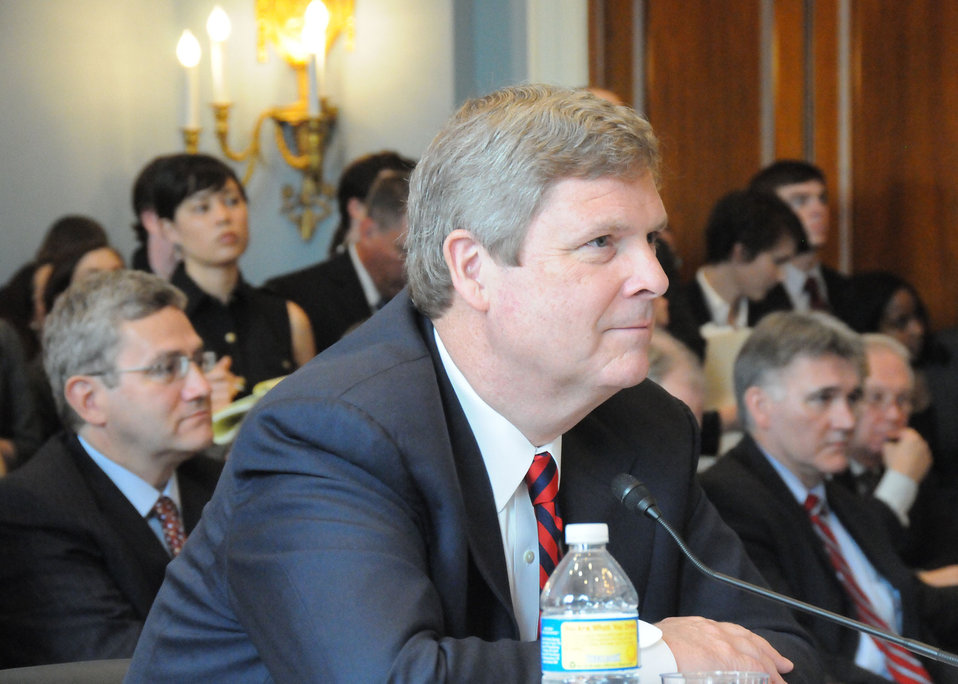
Agriculture Secretary Tom Vilsack testifies before the House Committee on Agriculture at the Longworth House Office Building in Washington, D.C., on Wednesday, April 21, 2010. USDA photo 10di1320-107